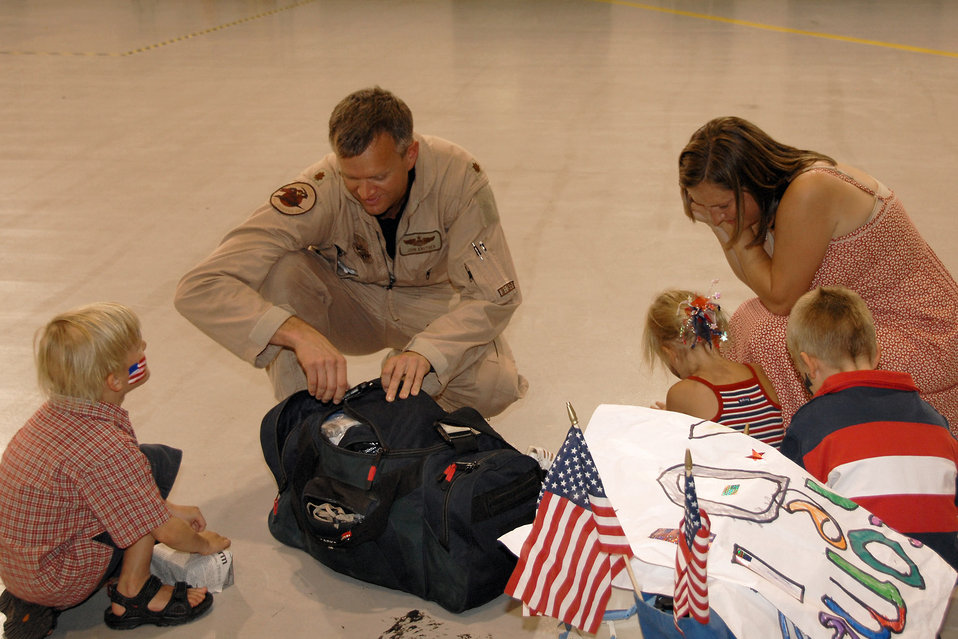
Arriving home!

Maj. John Knutsen, with the 174th Fighter Wing at Hancock Field, N.Y., searches his bag for souvenirs for his family after returning home Aug. 5 from Southwest Asia in support of Operation Iraqi Freedom.